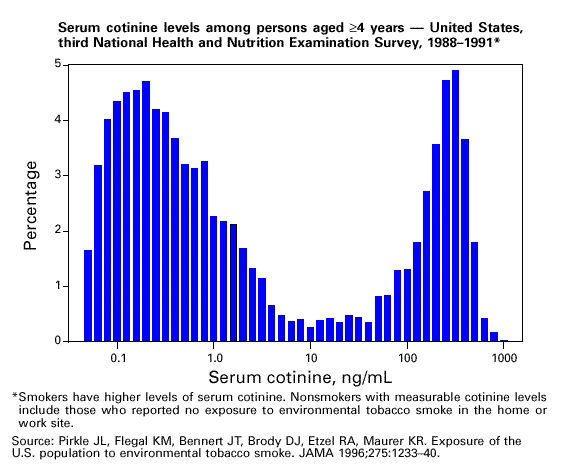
Bar graph showing serum cotinine levels among persons aged 4 years and above.